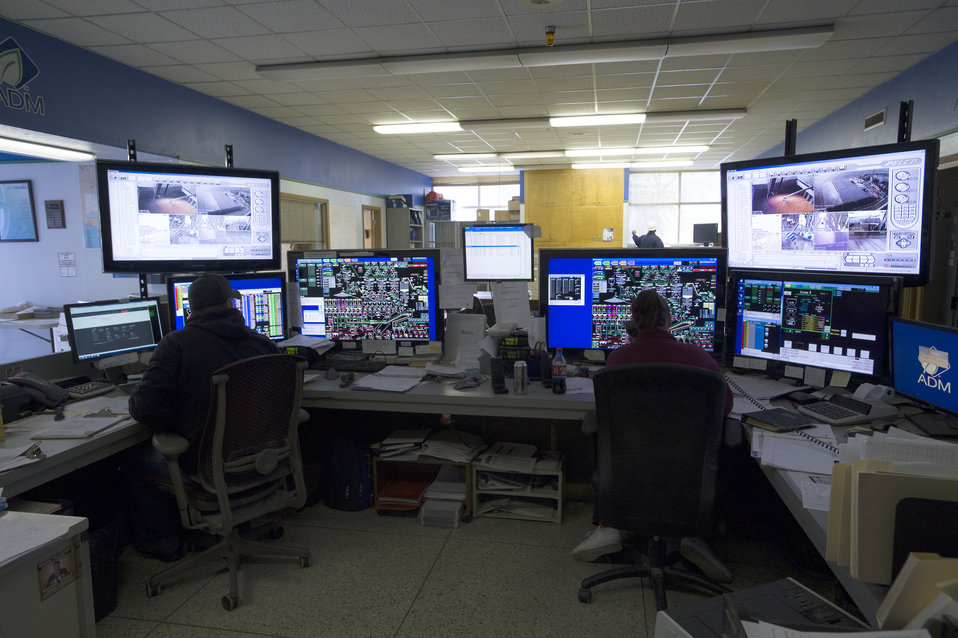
The U.S. Department of Agriculture (USDA) Grain Inspection, Packers and Stockyards Administration (GIPSA) Federal Grain Inspection Service (FGIS) monitors grain operations near the Port of New Orleans in New Orleans, LA on Tuesday, Nov. 19, 2013.